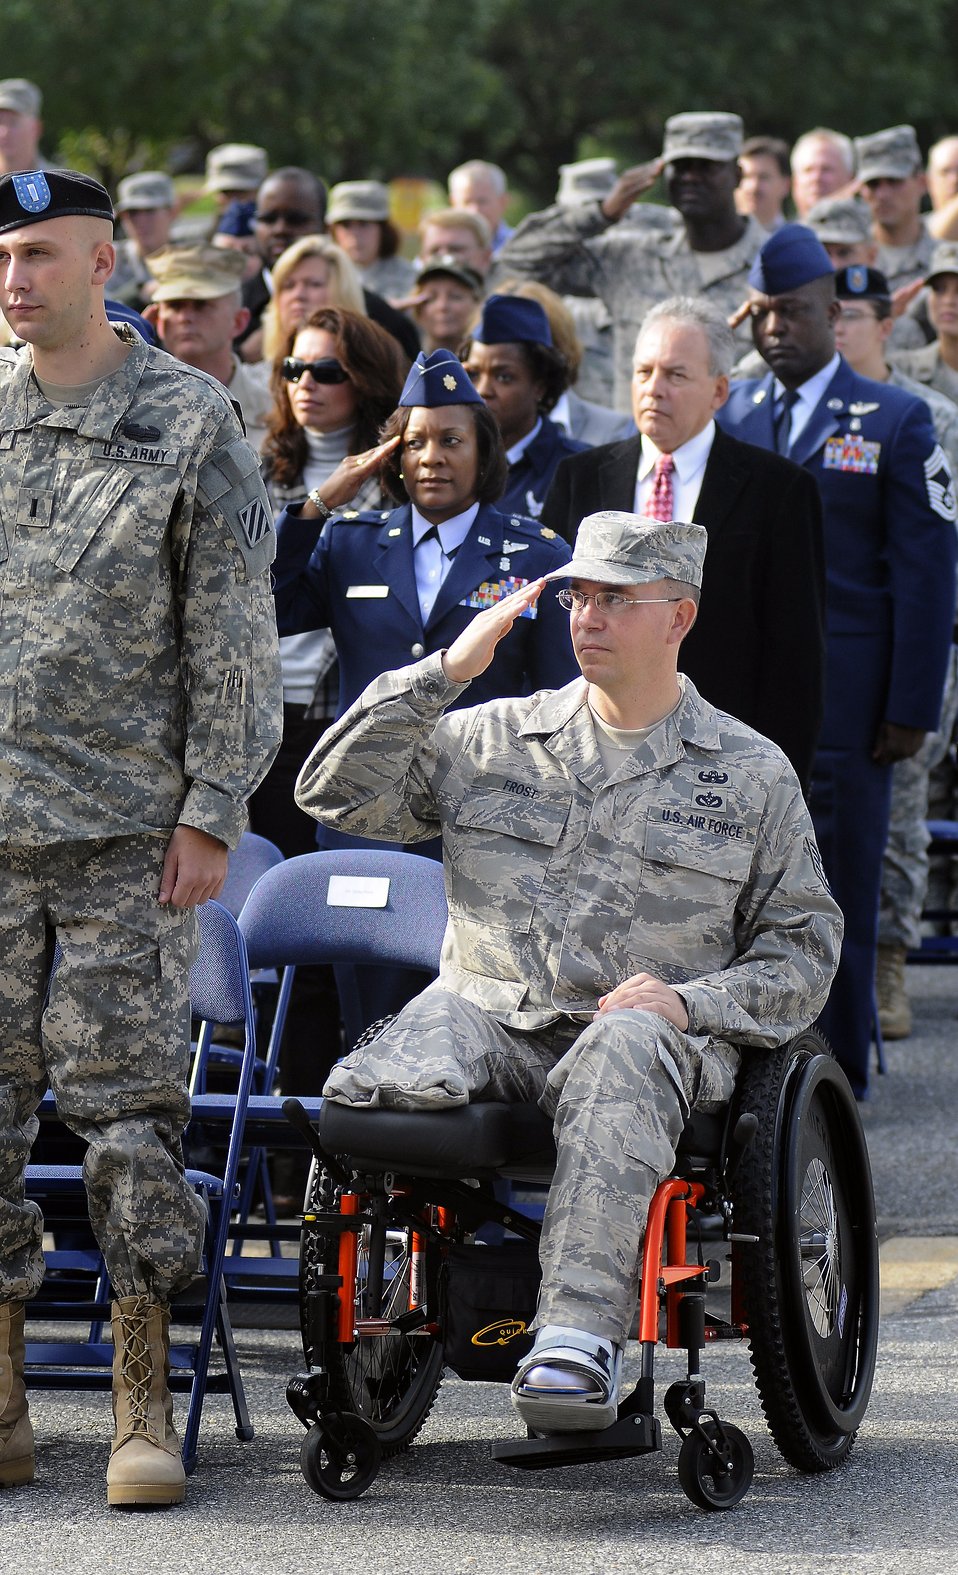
Renovated medical facility opens

Tech. Sgt. Christopher Frost salutes during the ribbon-cutting ceremony for the renovated 779th Aeromedical Staging Flight Oct. 9 at Malcolm Grow Medical Center at Andrews Air Force Base, Md. Sergeant Frost was wounded in Operation Iraqi Freedom and is a former patient at the ASF.